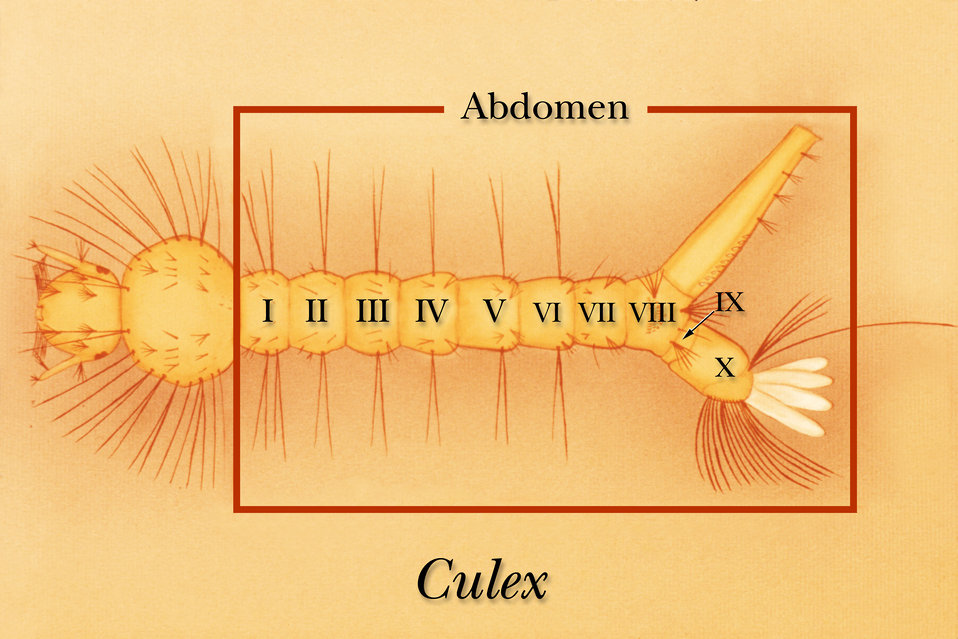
Illustration identifying the abdominal segments of a Culex mosquito larva.